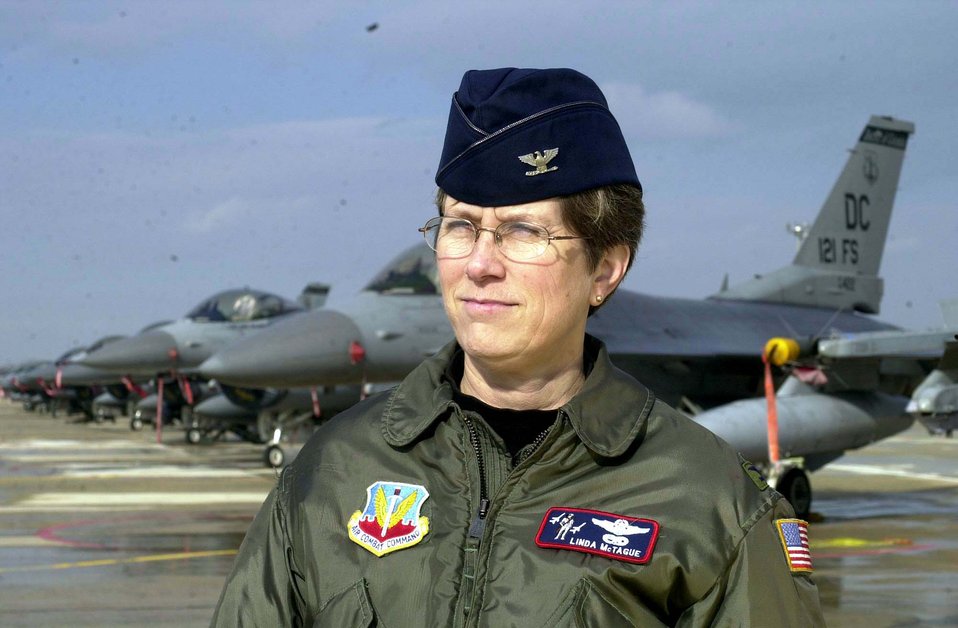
ANG commander does not see herself as pioneer

ANDREWS AIR FORCE BASE, Md. -- Air National Guard Col. Linda McTague is the first woman to command an ANG wing, and historical records show she is the first woman to command an Air Force fighter squadron.